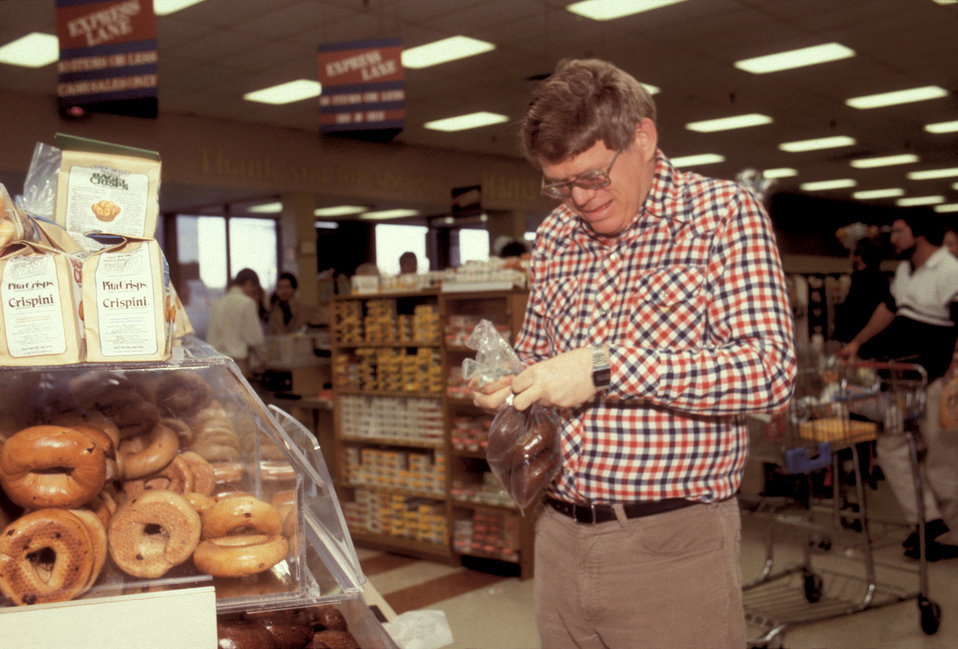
This cognitively-impaired man was photographed while in the process of shopping for groceries in this retail store. In this particular image, he was bagging a number of loose pumpernickel bagels, and fastening the twist tie, benefiting from shopping for baked items that were displayed in open bins where each variety could easily be seen. The clear plastic bag, used to store the selected items prior to checking out, also made it easy to remember what, and how many items were in each bag. In PHIL# 9101, he could be seen at the cash register paying for his selected items.